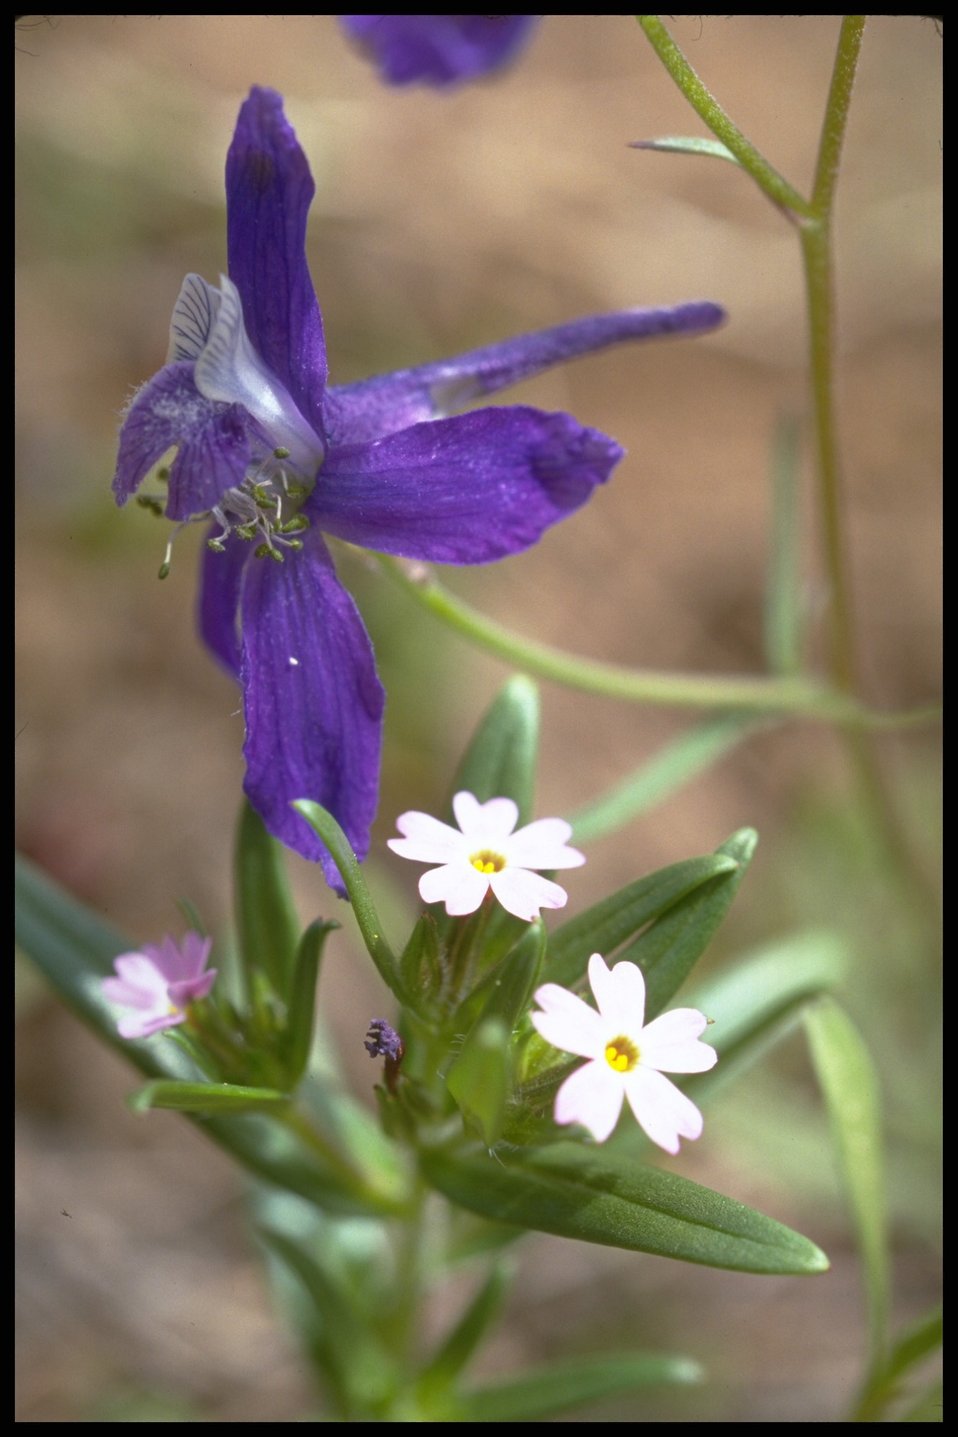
Medium shot of Delphinium and Tiny Trumpet wildflowers, Lakeview District.